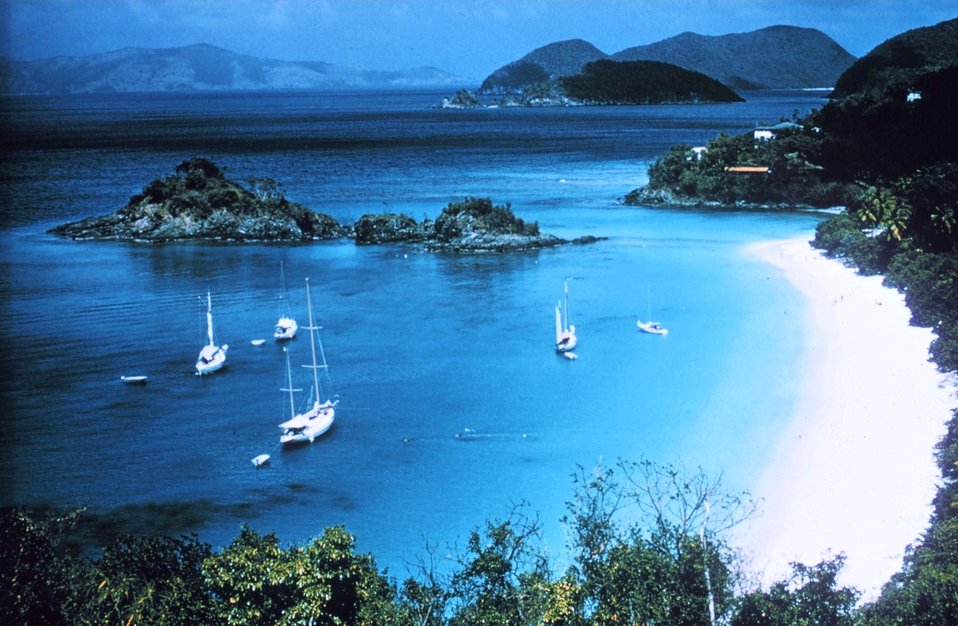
A quiet bay in paradise.